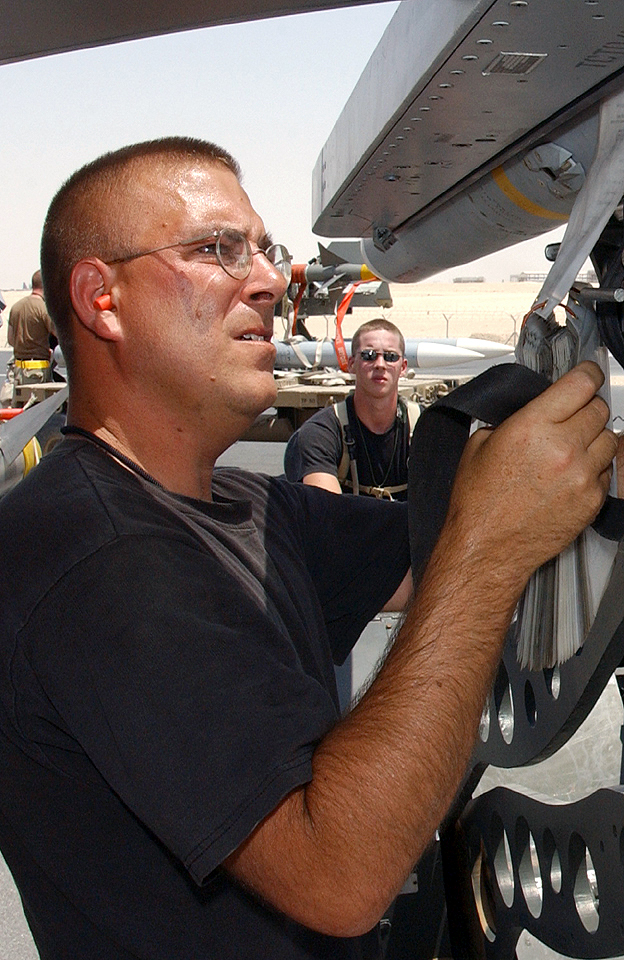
Missile maintenance

SOUTHWEST ASIA -- Staff Sgt. Scott Love (left) and Senior Airman Ken Tolbert remove an AIM-120 missile from an F-16 Fighting Falcon at a forward-deployed location supporting Operation Iraqi Freedom. Both are assigned to the 379th Expeditionary Aircraft Maintenance Squadron and are deployed from the 421st Fighter Squadron at Hill Air Force Base, Utah.